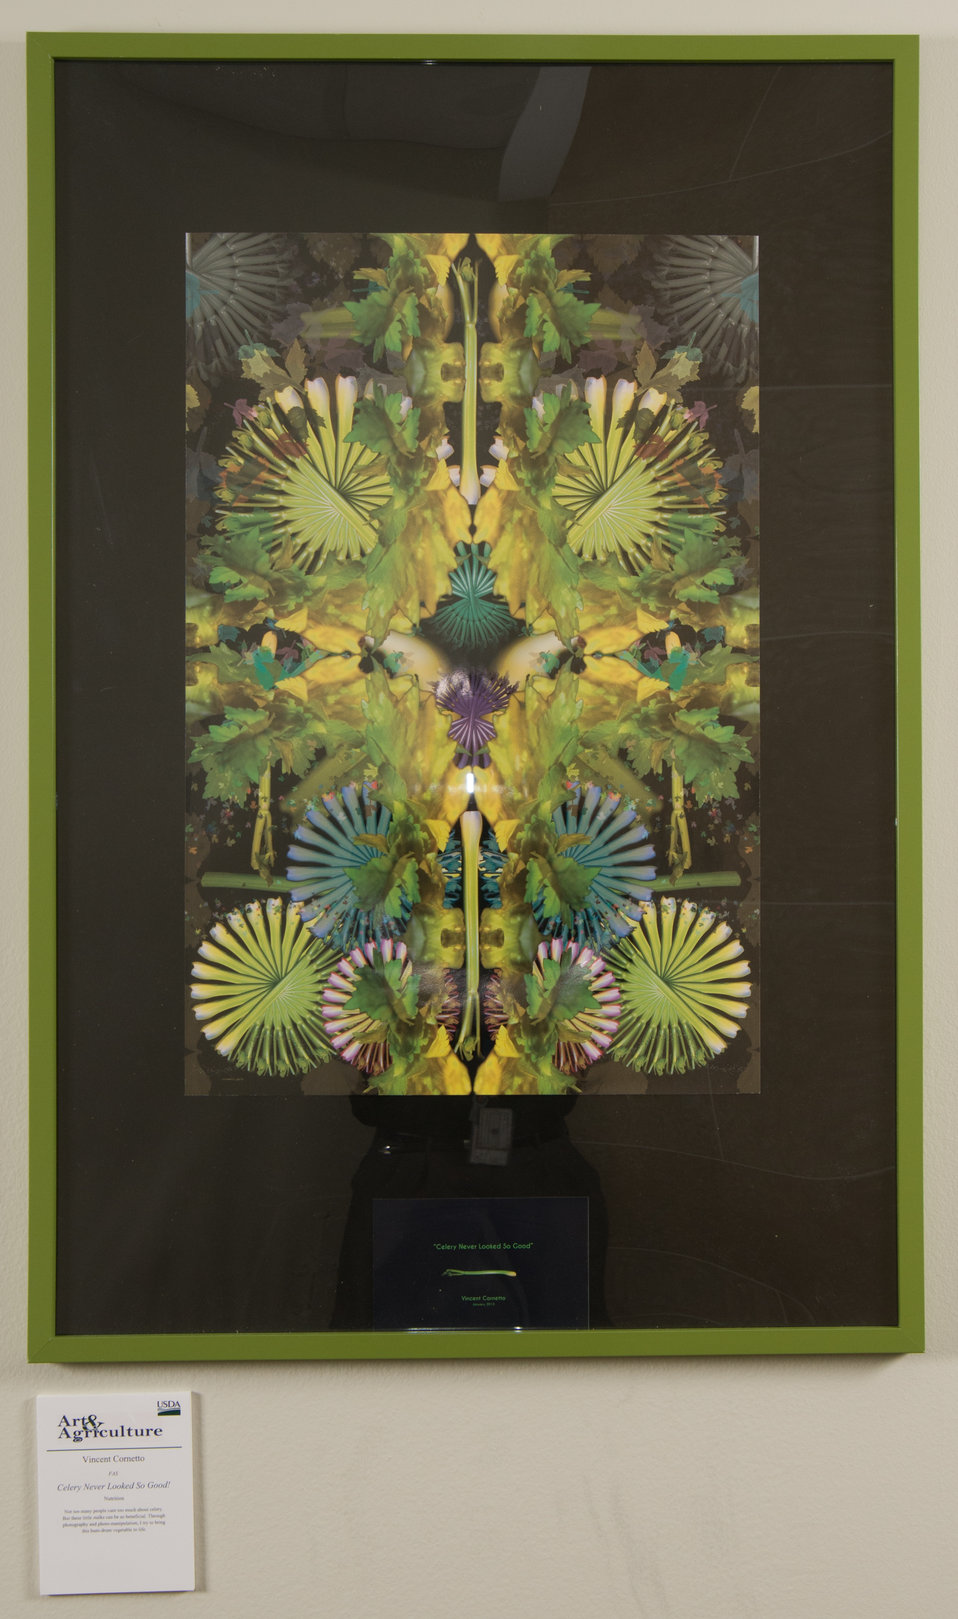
Online Viewer's Choice entries of the 2013 Art & Agriculture, Tuesday, July 9, 2013, in the South Building, Washington, D.C. Themes were expressed by employees from across the department and the contest was open to full-time and part-time USDA employees. Winning artwork will be displayed till the end of the year. U.S. Artistic expression is a creative outlet that is vital for an individual to grow and develop.